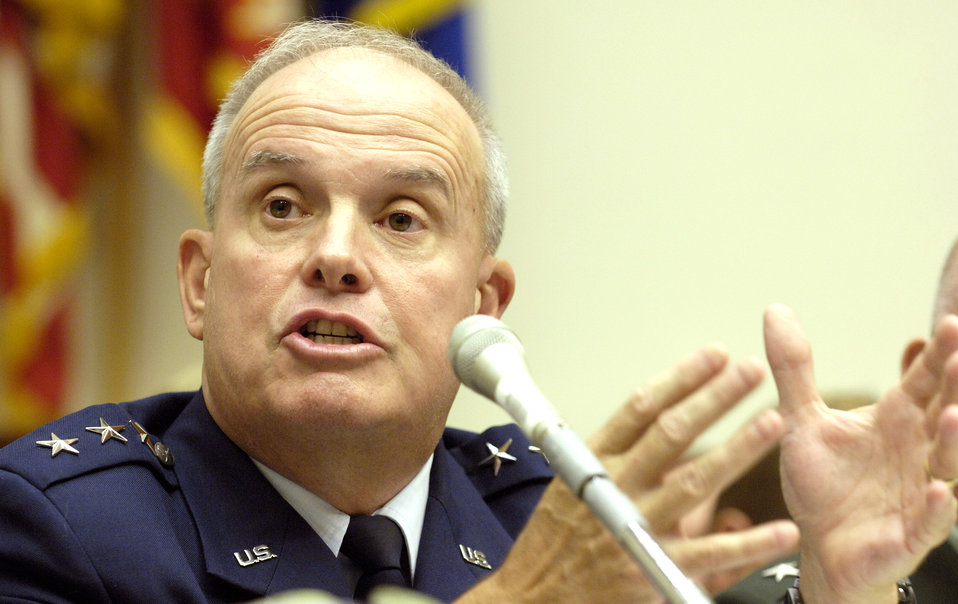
Future Total Force testimony

WASHINGTON -- Lt. Gen. Stephen G. Wood answers questions about the Air Force's future total force initiative during a hearing before the House Armed Services Committee July 20. The goal of the future total force initiative is to maximize Air Force capabilities by identifying emerging relevant missions for the active-duty component, the Air National Guard and the Air Force Reserve as a total force team. General Wood is the Air Force deputy chief of staff for plans and programs.